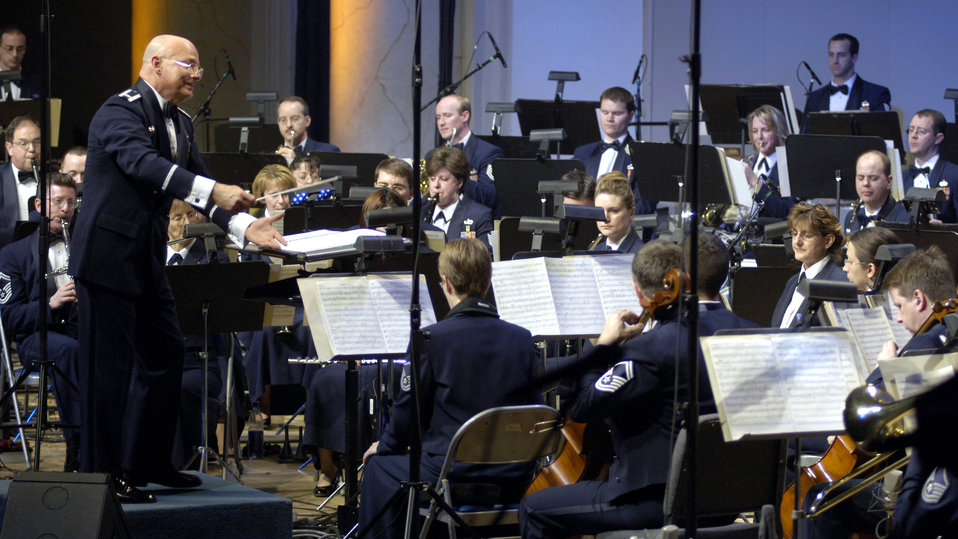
USAF Band guest artist series

Col. Dennis Layendecker, commander and music director, begins the last concert of the season's guest artist series, Sunday, March 5, 2006, in Washington, D.C. The Air Force Band capped its 40th anniversary hosting the series by performing with country singer Mark Wills and the Air Force Reserve Pipe Band from Robins Air Force Base, Ga.